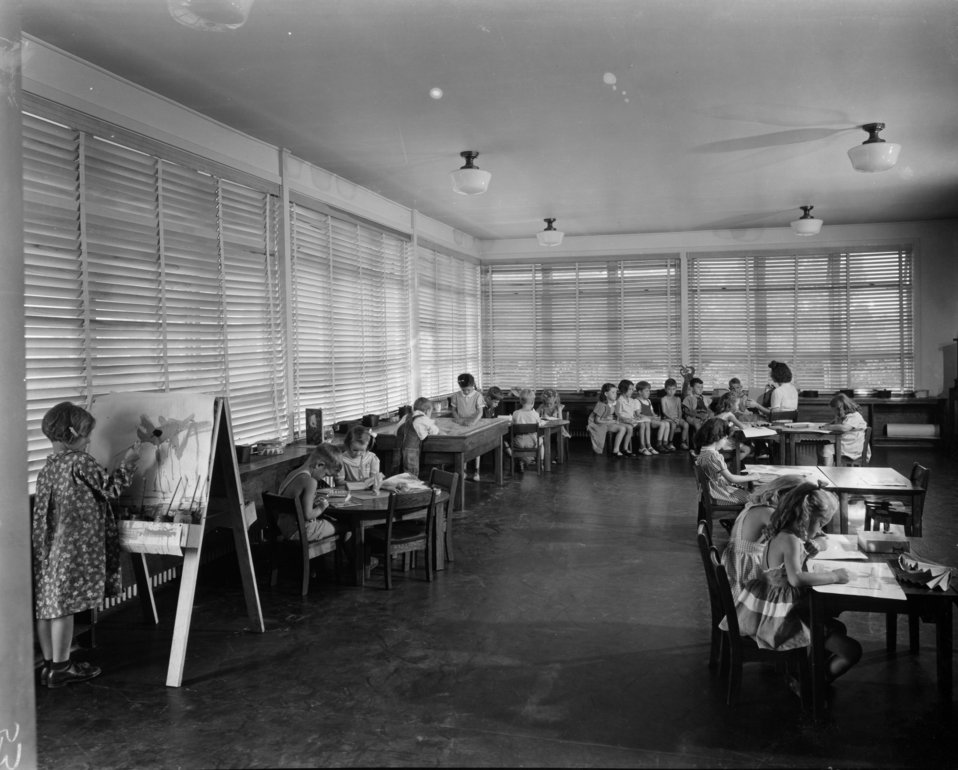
Schools at Oak Ridge